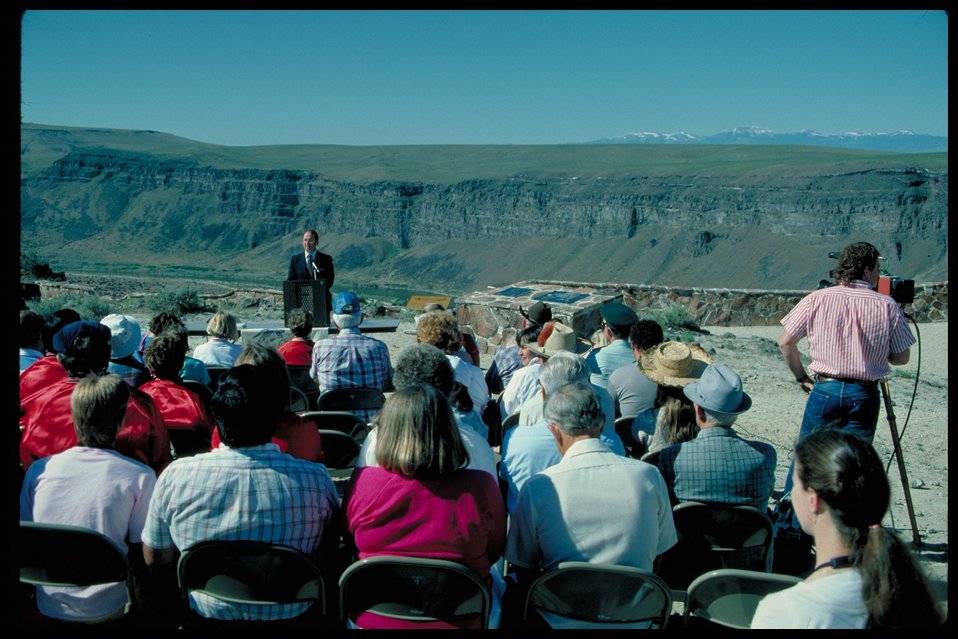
Education Birds of Prey National Conservation Area BOP Owyhee Field Office LSRD Lower Snake River District